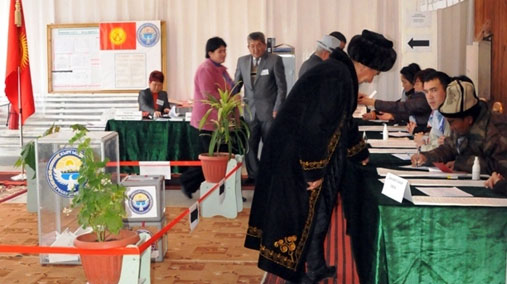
Kyrgyz cast their ballots at a polling station in Kyrgyzstan, October 10, 2010.